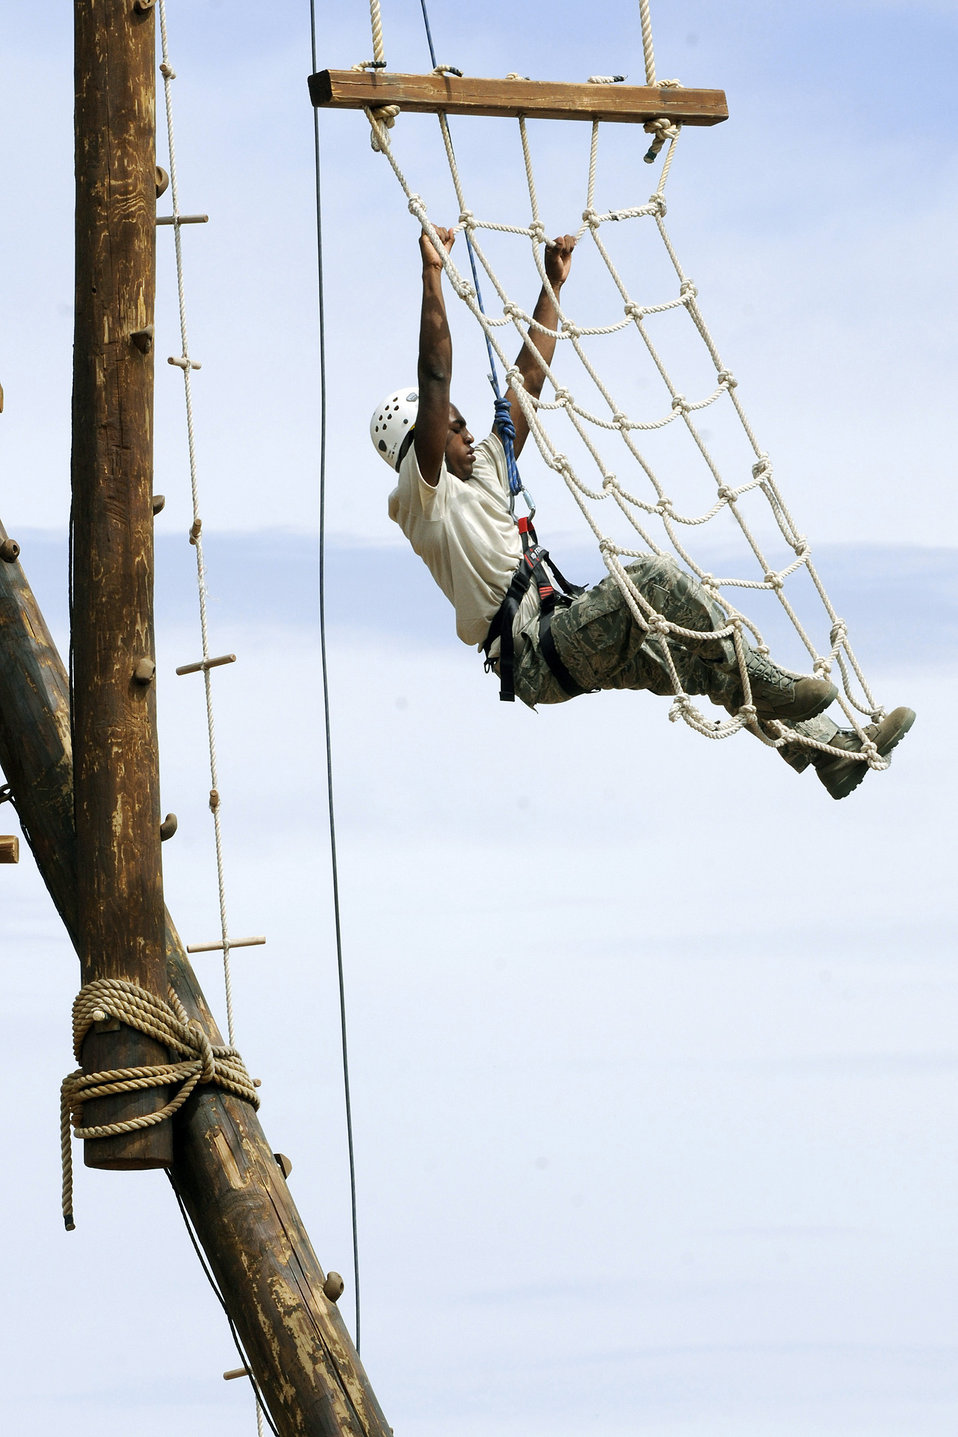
Aerial training?

A cadet candidate with the Air Force Academy Preparatory School pulls himself up while on one of the Academy's Ropes Course stations July 23, 2010. Students receive military, academic and time-management training to prepare them for their freshmen year at the Academy.